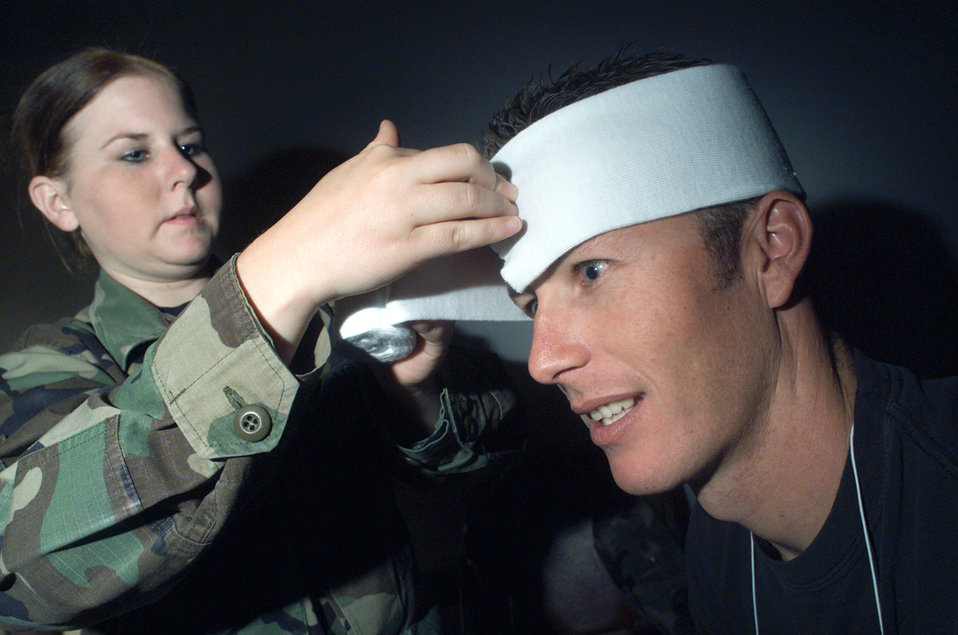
Medics 'exercise' their skills

DAVIS-MONTHAN AIR FORCE BASE, Ariz. -- Airman Catrina Cosman wraps Staff Sgt. Greg McDonnell's head to treat simulated burn injuries sustained from a terrorist explosion as part of an exercise here. Airman Cosman is assigned to the 355th Aerospace Medical Squadron, and Sergeant McDonnell is assigned to the 43rd Electronic Combat Squadron.